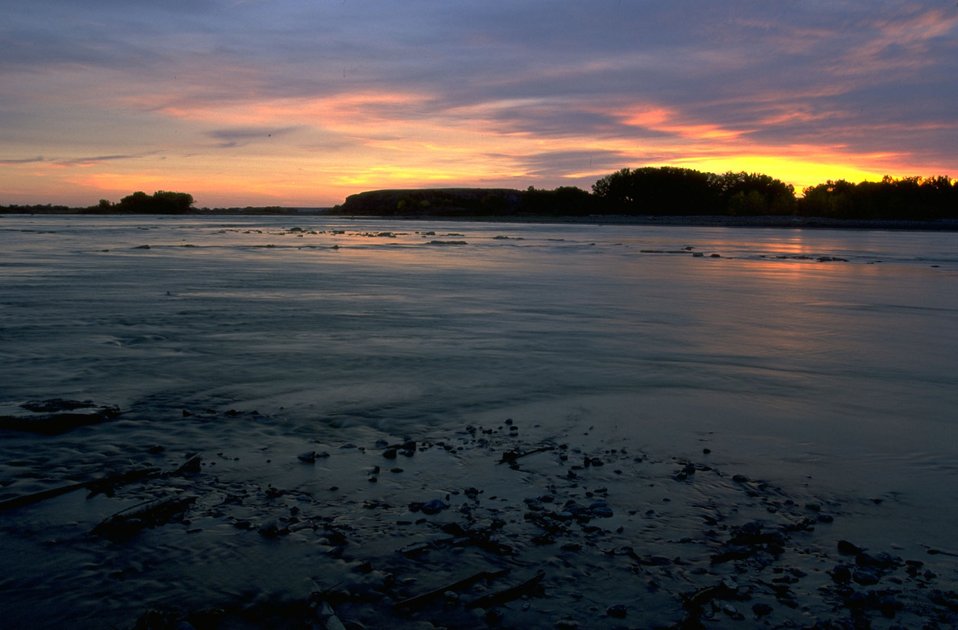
Sunset reflecting on the Yellowstone River